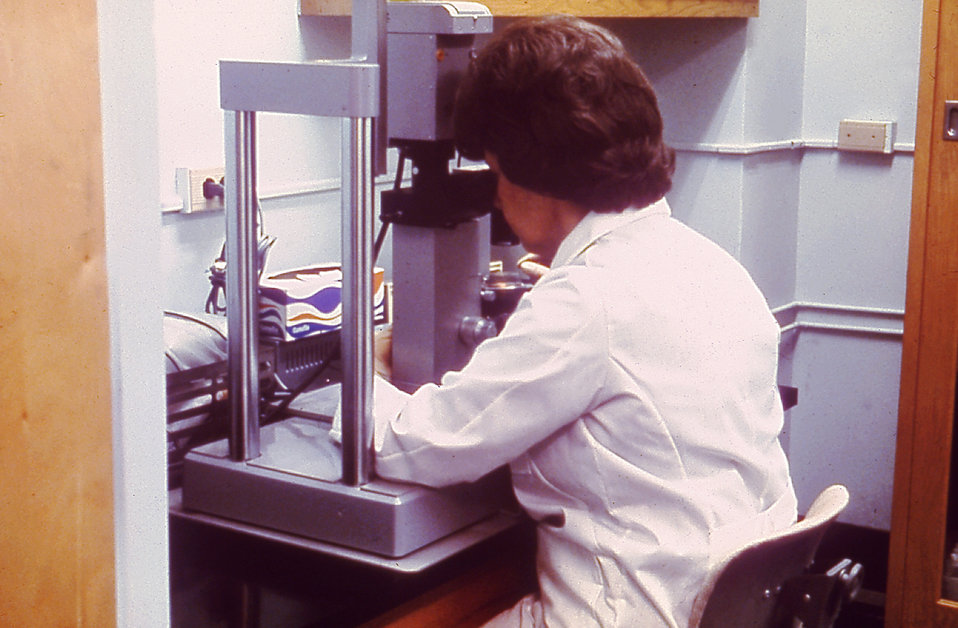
This lab technician is analyzing the cell growth of amniotic fluid cell cultures by quantifying the changes in cell numbers.